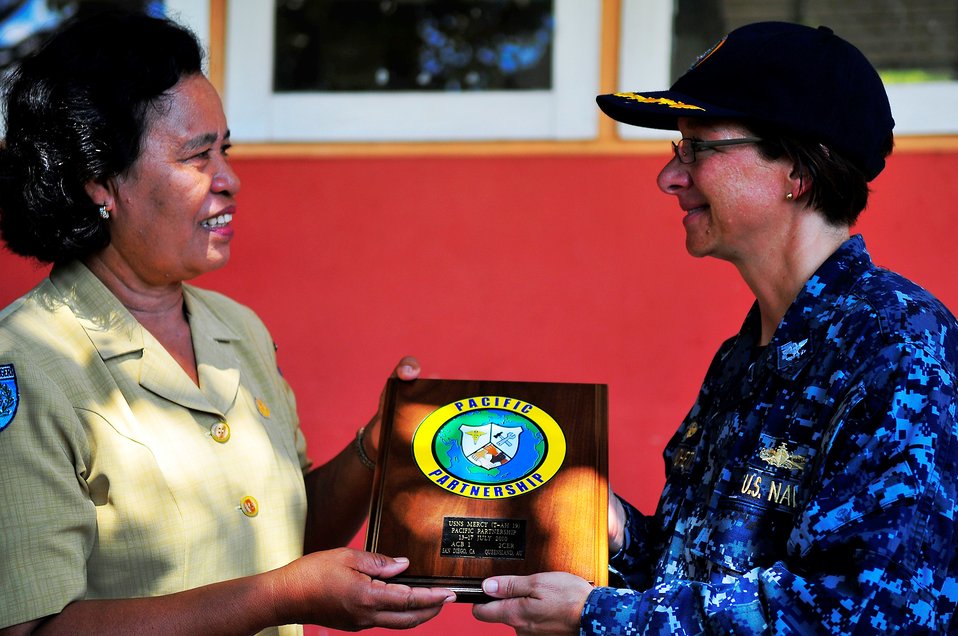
PP2010 Commander Capt. Franchetti Presents the Head Mistress of the Negeri School With a Plaque

Pacific Partnership 2010 Commander Capt. Lisa M. Franchetti presents the head mistress of the Negeri school with a plaque at an engineering civic action program, conducted by the Military Sealift Command hospital ship USNS Mercy (T-AH 19) during its visit to Tobelo, Indonesia, on July 13, 2010. Pacific Partnership 2010 is the fifth in a series of annual U.S. Pacific Fleet humanitarian and civic assistance endeavors to strengthen regional partnerships.